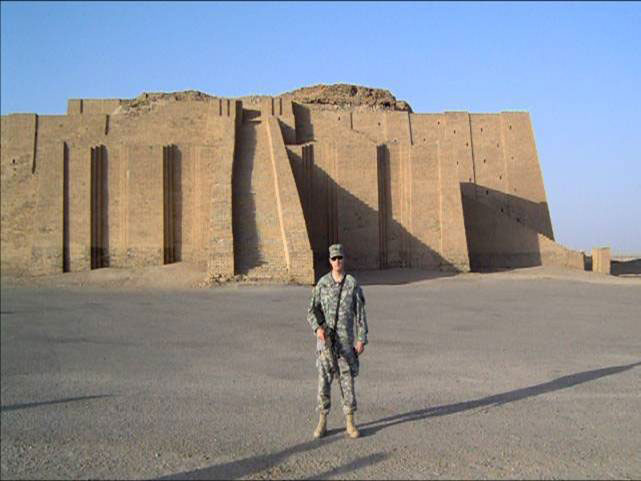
Richard Rottman, of the Migratory Bird Permit Office in Region 3, served with the Minnesota Army National Guard.